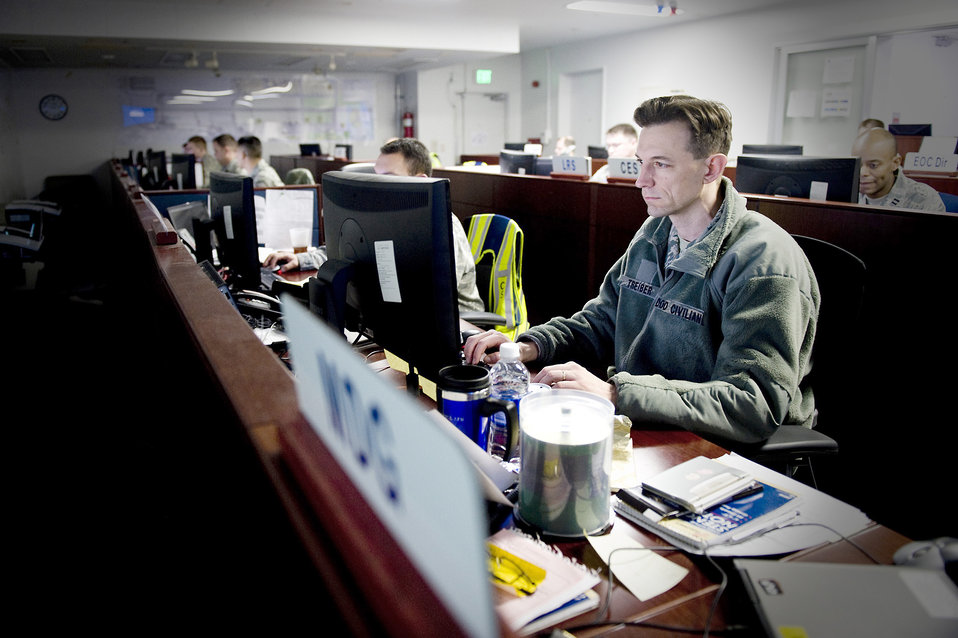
Yokota Airmen central to supporting Operation Tomodachi

Representatives from the Installation Control Center and Emergency Operations Center work together to collect and track information in support of Operation Tomodachi March 28, 2011 at Yokota Air Base, Japan.